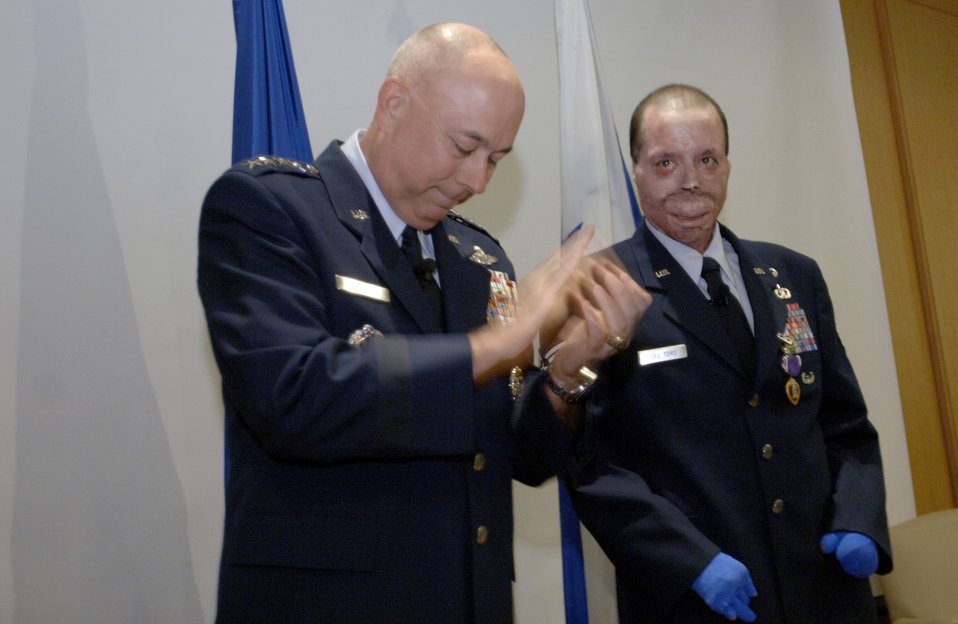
Purple Heart Presentation

Air Force Chief of Staff Gen. T. Michael Moseley joins the more than 200 family, friends, and fellow servicemembers in applause for Staff Sgt. Israel del Toro during the presentation of the Purple Heart Medal today at Brooke Army Medical Center at Fort Sam Houston, Texas. Sergeant del Toro was wounded during combat action in Afghanistan in December 2005 while supporting Operation Enduring Freedom.